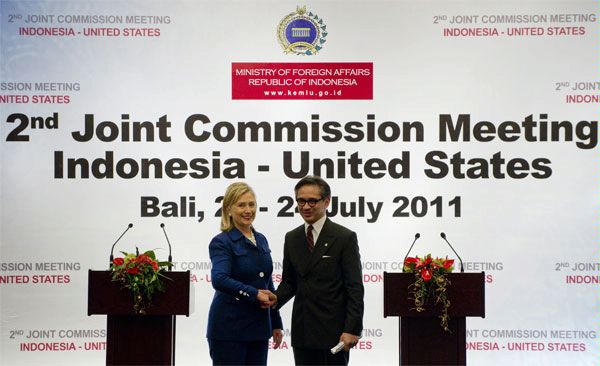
Secretary Clinton and Indonesian Foreign Minister Natalegawa Address Reporters

U.S. Secretary of State Hillary Rodham Clinton and Indonesian Foreign Minister Marty Natalegawa address reporters in a joint press conference on the U.S.-Indonesia Joint Commission Meeting in Bali, Indonesia, on July 24, 2011.